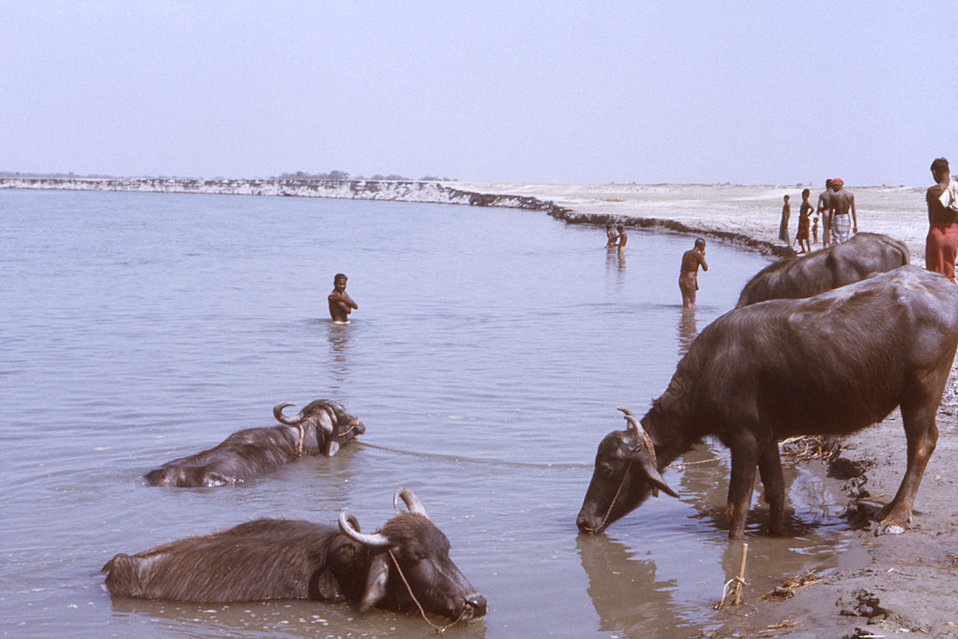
This photograph depicted four heads of cattle on the banks of a body of water inside the country of Bangladesh, as well as a number of Bengali villagers taking a respite from the hot weather as the cattle drank from the water's edge.The image was captured sometime during the worldwide smallpox eradication campaign of the 1970s.The Disease